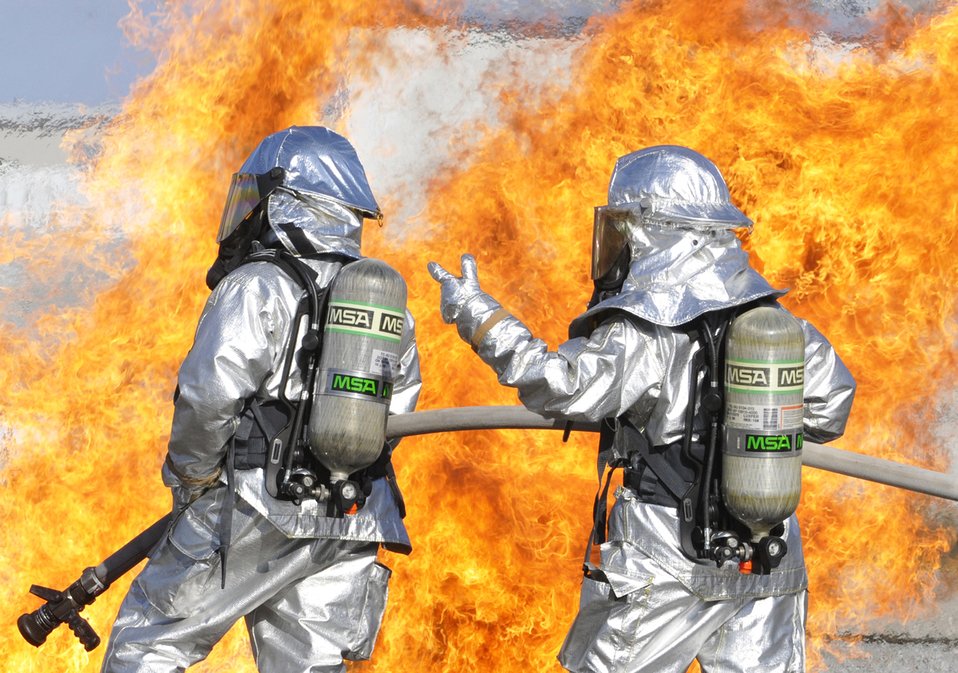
Check the pressure?

Firefighters from the Florida Air National Guard's 125th Fighter Wing at Jacksonville discuss firefighting options while training at the Air National Guard's Combat Readiness Training Center in Savannah, Ga., March 13, 2010.